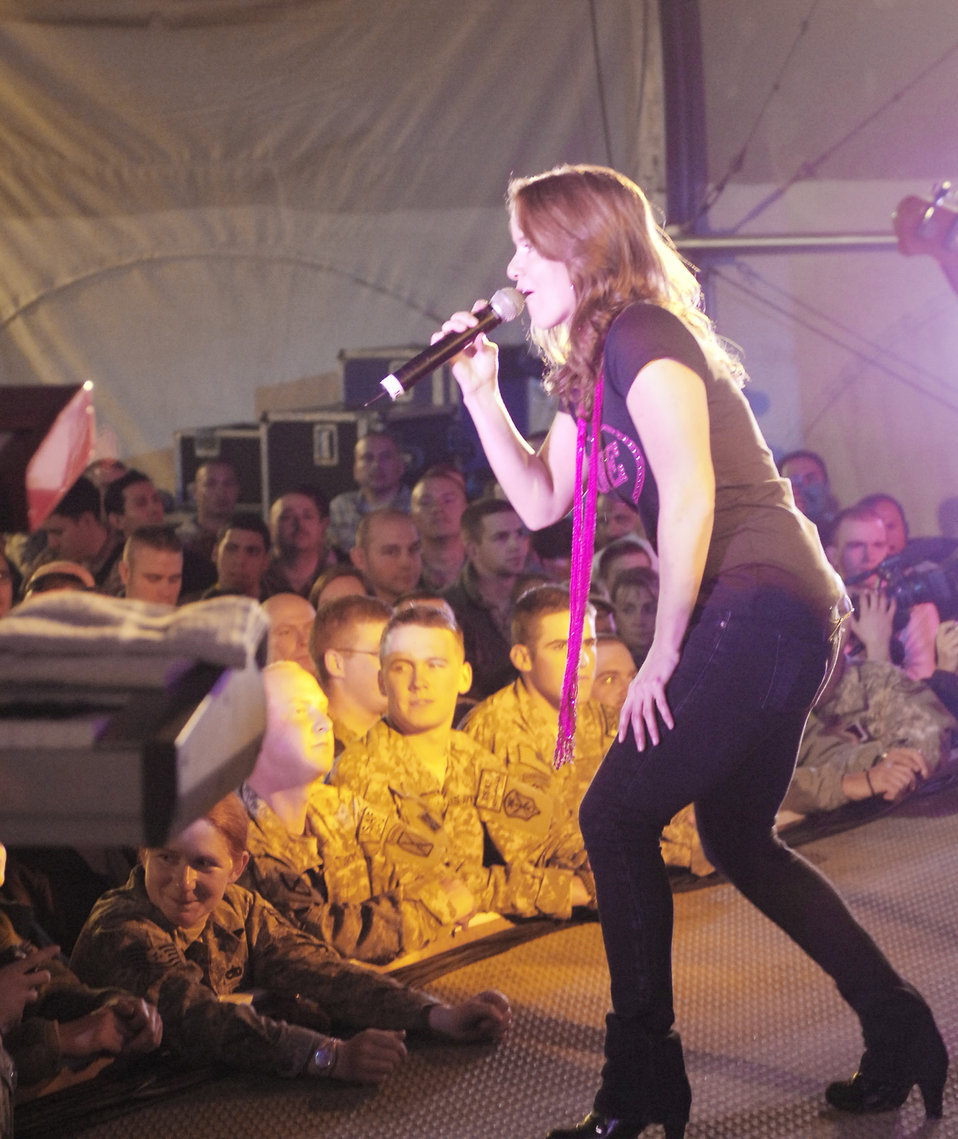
Celebrities thank troops at Thanksgiving concert

The Lieutenant Dan Band performs for troops Nov. 23, 2009, at Bagram Airfield, Afghanistan.